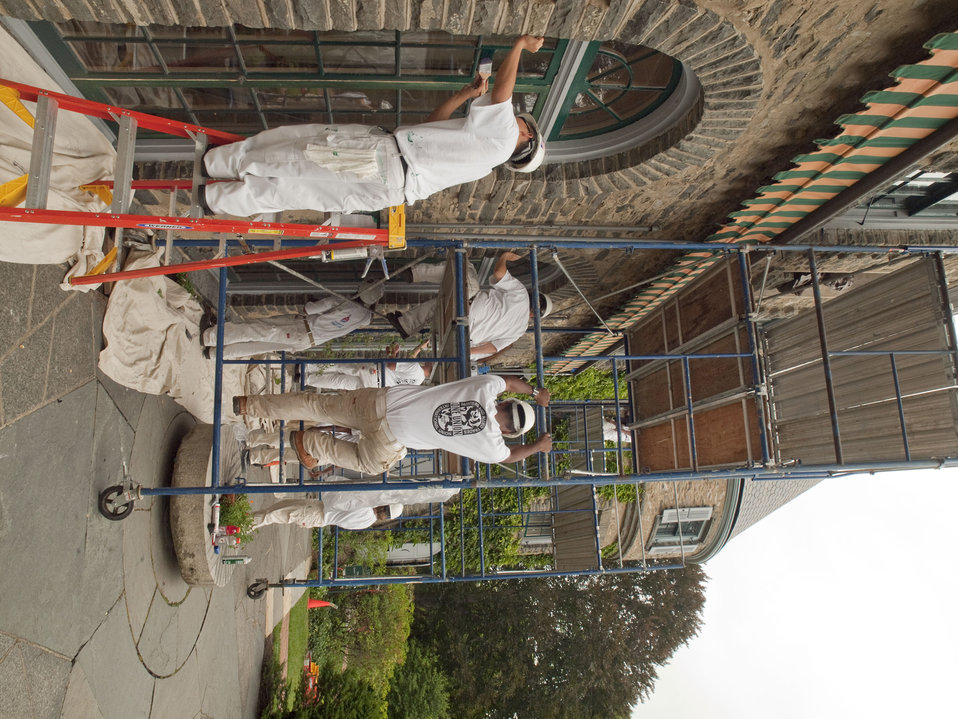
Job Corps students help to restore Grey Towers National Historic Site. $2,440,000 in Recovery Act funds were allocated to repair and refurbish the house and grounds of the ancestral home of the first Chief of the Forest Service and two-term Pennsylvania governor Gifford Pinchot on Tuesday August 3, 2010 in Milford, PA. This project at the 123-year-old site repairs various deficiencies with the buildings and grounds, restores areas of the historic landscape, improves visitor safety and site security, provides a more sustainable facility, and enhances the visitor experience. It helps to ensure the historic site is maintained for years to come.